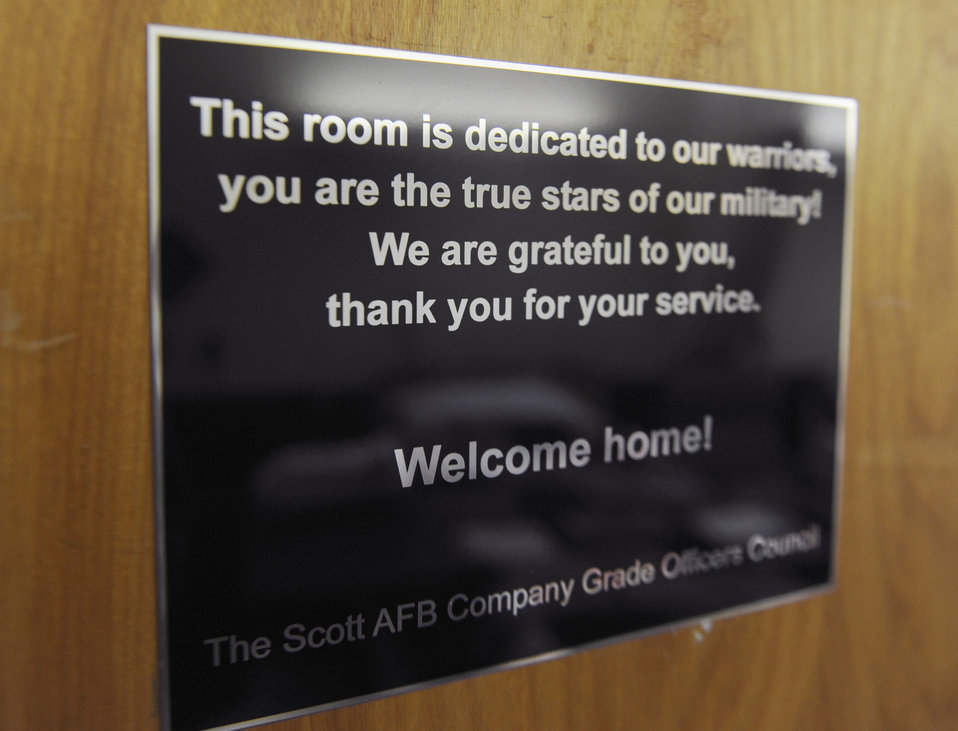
375th ASF

A placard displayed on a patient's room at the 375th Aeromedical Staging Flight denotes that the room is sponsored by the Company Grade Officer Council Dec. 13, 2010, at Scott Air Force Base, Ill. This room is one of 17 patient rooms and nine common areas sponsored by various agencies around the base.